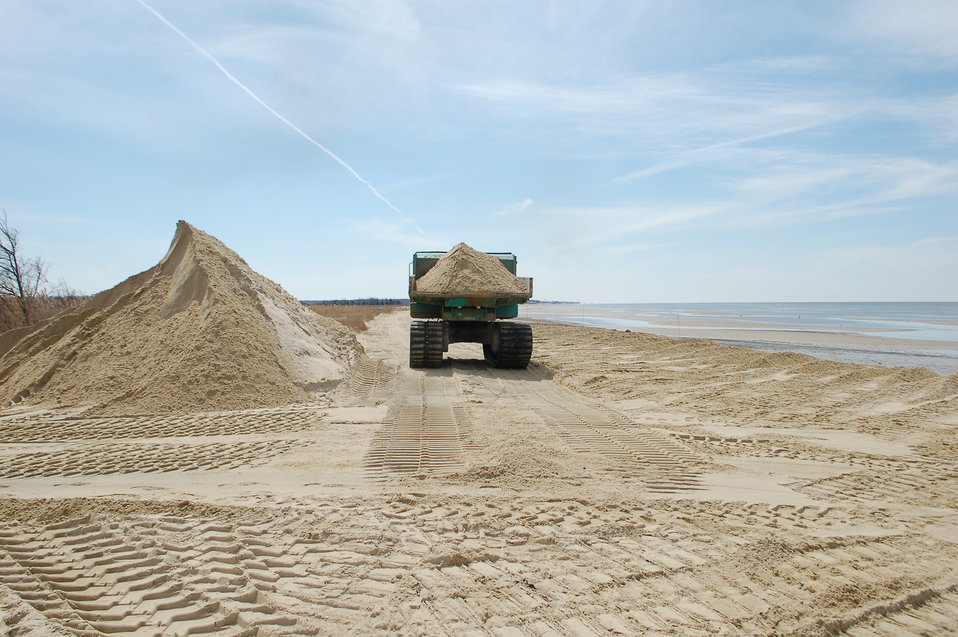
Kimbles Beach-7

New sand is deposited onto badly eroded beaches on New Jersey's Delaware Bay.